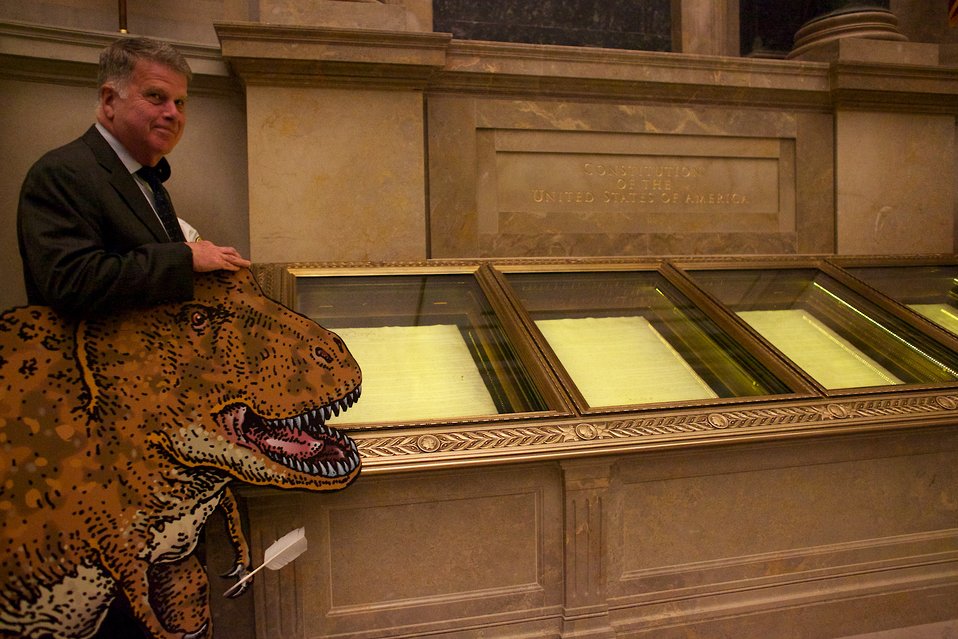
Smithsonian Institution's TRex visits the National Archives